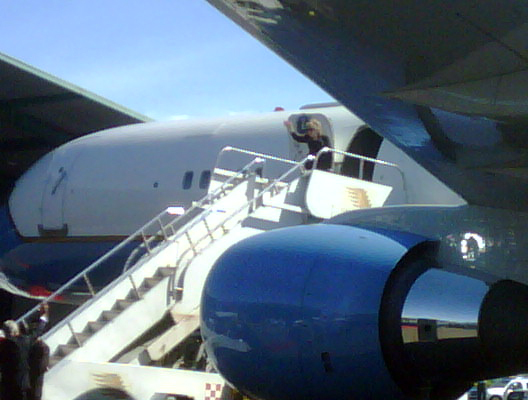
Secretary Clinton Departs Costa Rica

U.S. Secretary of State Hillary Rodham Clinton waves from her plane as she departs San Jose, Costa Rica, bound for Guatemala March 5, 2010.